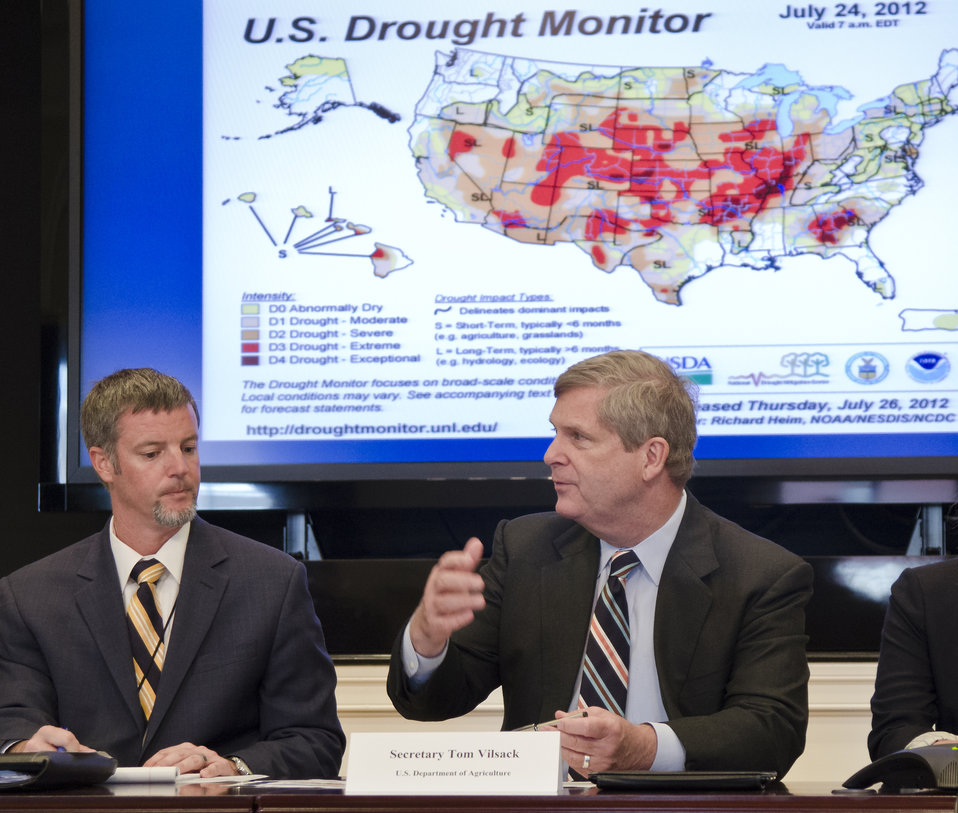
Agriculture Secretary Tom Vilsack chaired a meeting of the White House Rural Council at the Executive Office Building in Washington, D.C. on Friday, July 27, 2012 to update members and stakeholders on the Administration response to the drought and explore ways to assist American farmers and ranchers suffering in its affects. Following President Obama’s instructions of using exiting programs to support struggling farmers and ranchers the U.S. Department of Agriculture’s (USDA) has implemented several processes to assist American farmers and ranchers. USDA has streamlined drought disaster declarations directly from Drought Monitor data, allowed nearly 30 million acres under the Conservation Reserve Program (CRP) to be used for emergency haying or grazing, lowered payment reduction for CRP lands that qualify for emergency haying and grazing in 2012, from 25% to 10%, allowed producers to modify current Environmental Quality Incentives Program (EQIP) contracts to allow for grazing, livestock watering and other conservation activities to address drought conditions, and has authorized haying and grazing of Wetlands Reserve Program (WRP) easement area in drought-affected areas where haying and grazing is consistent with conservation of wildlife habitat and wetlands, and reduced the interest rate for Farm Service Agency (FSA) Emergency loans from 3.75% to 2.25%.